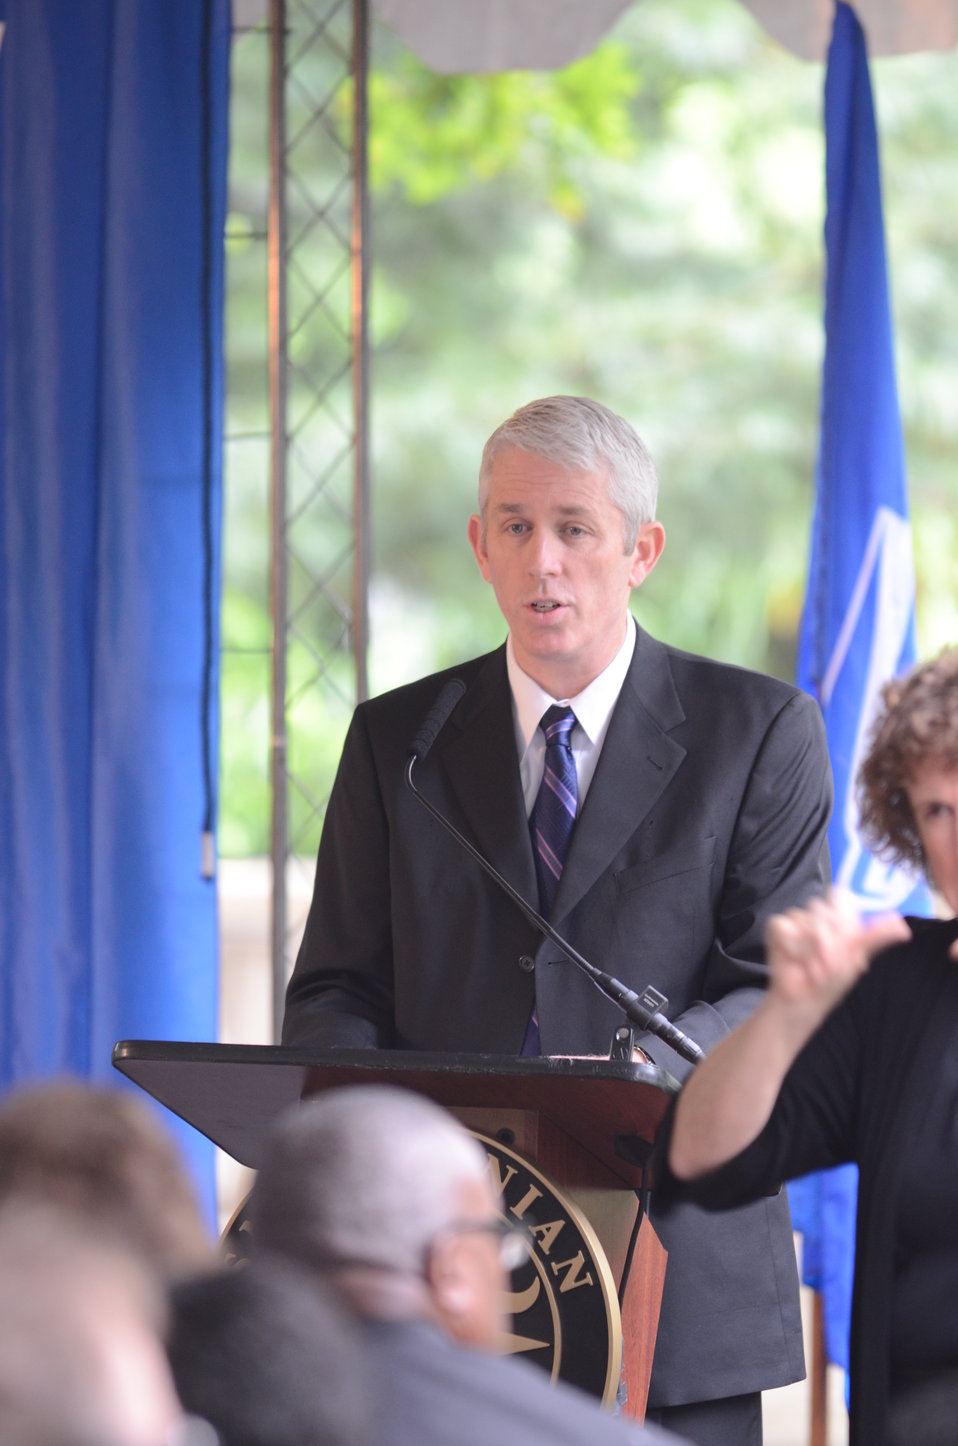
Save Vanishing Species Stamp First Day of Issue